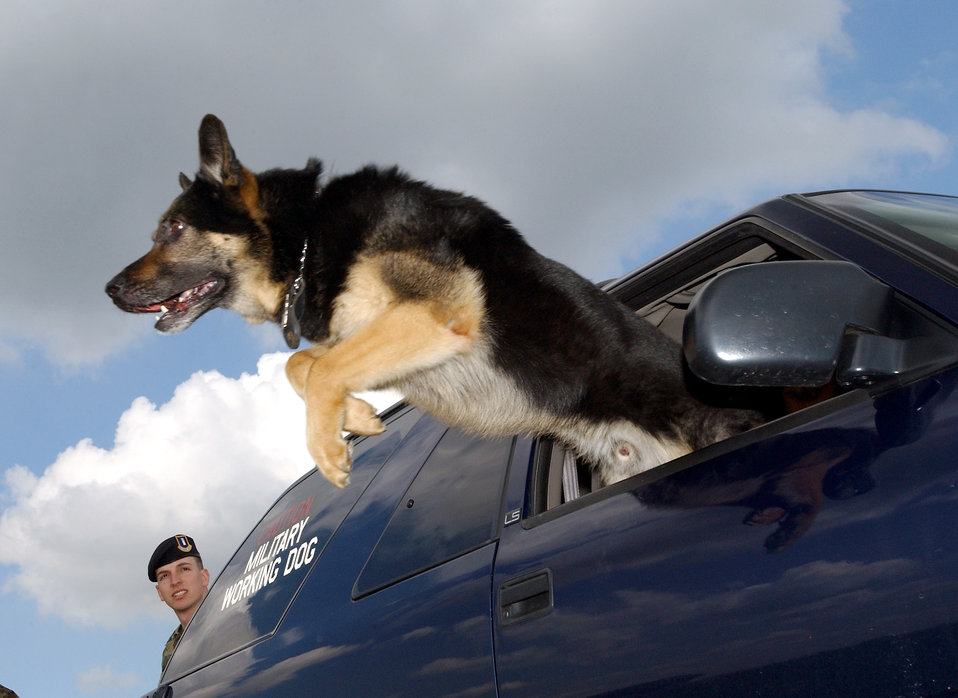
Go get him!

ROYAL AIR FORCE FAIRFORD, England -- Ben leaps out of a security forces vehicle to apprehend a suspect during his training as a stand-off and non-lethal weapon here April 13. Ben is a military working dog with the 100th Security Forces Squadron at Royal Air Force Mildenhall, England.